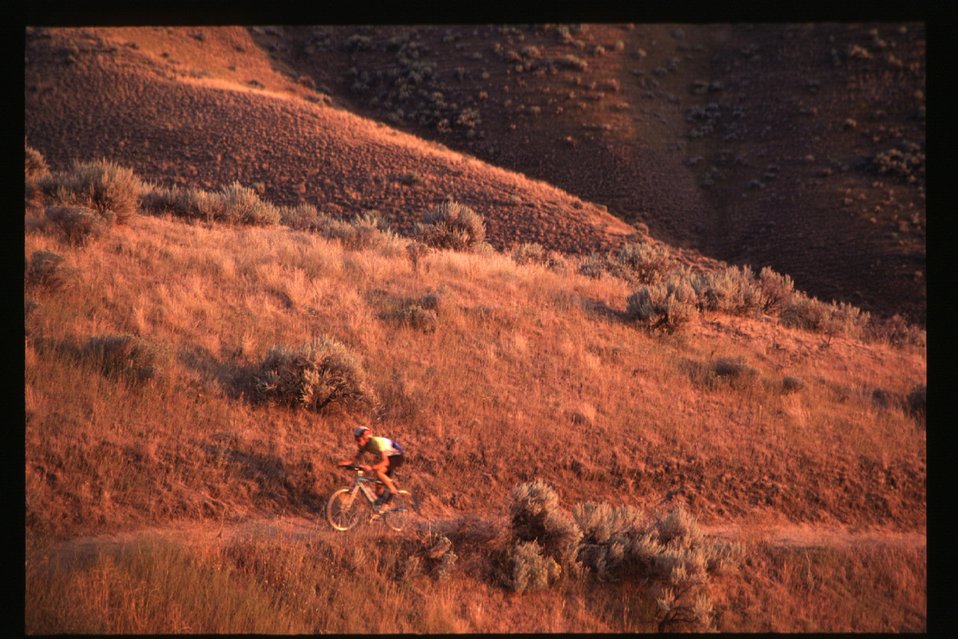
Bikers on Boise Foothills Boise Front bicyclists Four Rivers Field Office LSRD Lower Snake River District